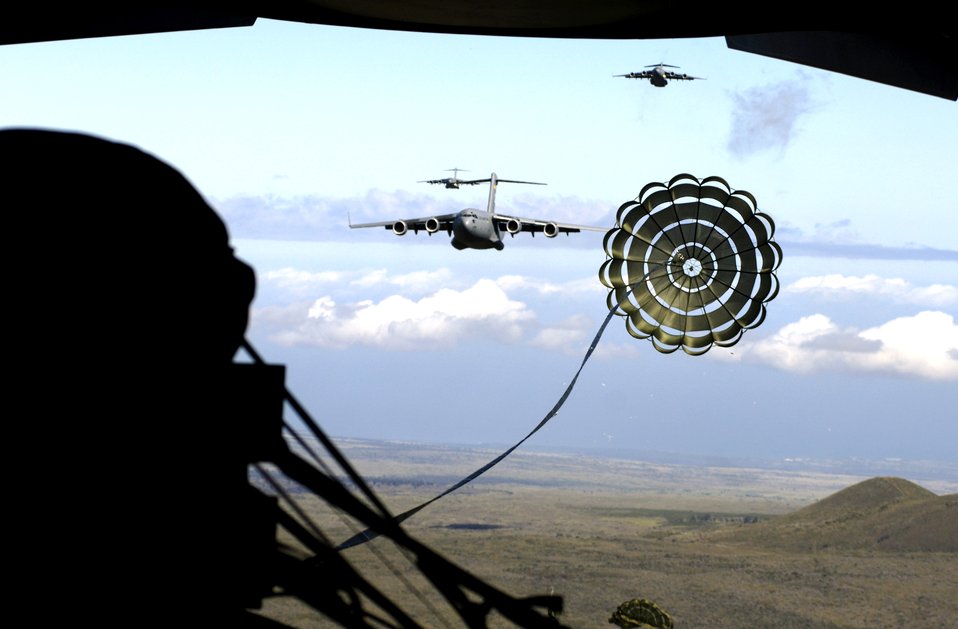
C-17 airdrop training mission

An extraction chute opens over the drop zone during an airdrop training mission on Tuesday, May 16, 2006. The C-17 Globemaster IIIs are from the 535th Airlift Squadron, Hickam Air Force Base, Hawaii. Base officials are conducting multi-element training for aircrews to maintain aircrew proficiency.